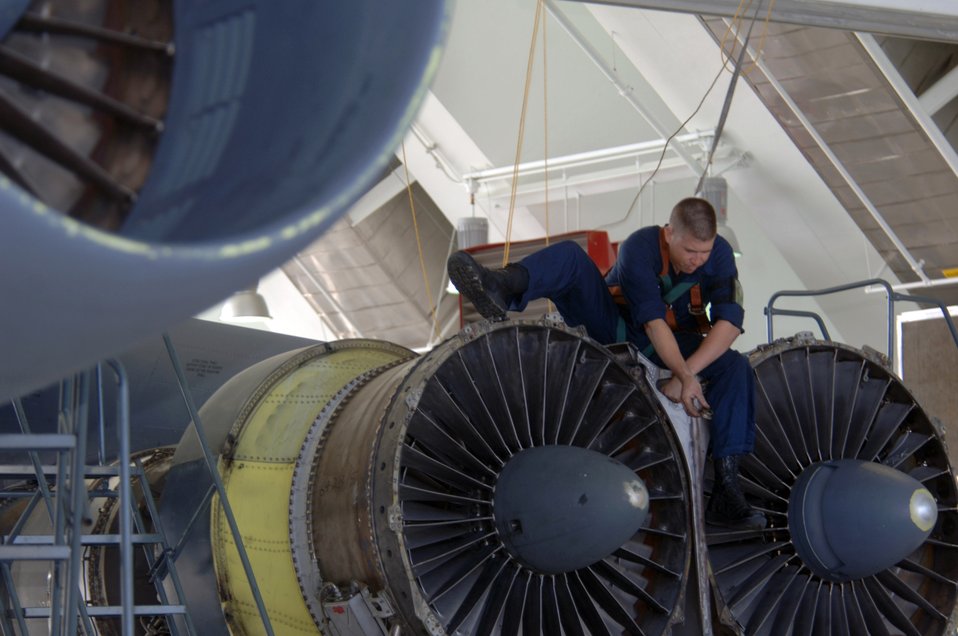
Final inspection

ANDERSEN AIR FORCE BASE, Guam (AFPN) -- Senior Airman Tommy Taylor inspects the engine of his B-52 Stratofortress aircraft during phase maintenance at Hangar 1 here. Airman Taylor is with the 2nd Maintenance Squadron at Barksdale Air Force Base, La. The B-52s come here from a forward-deployed location and go into phase maintenance after 300 flying hours. The $34-million hangar is the newest in the Air Force and can house any type of Air Force aircraft.